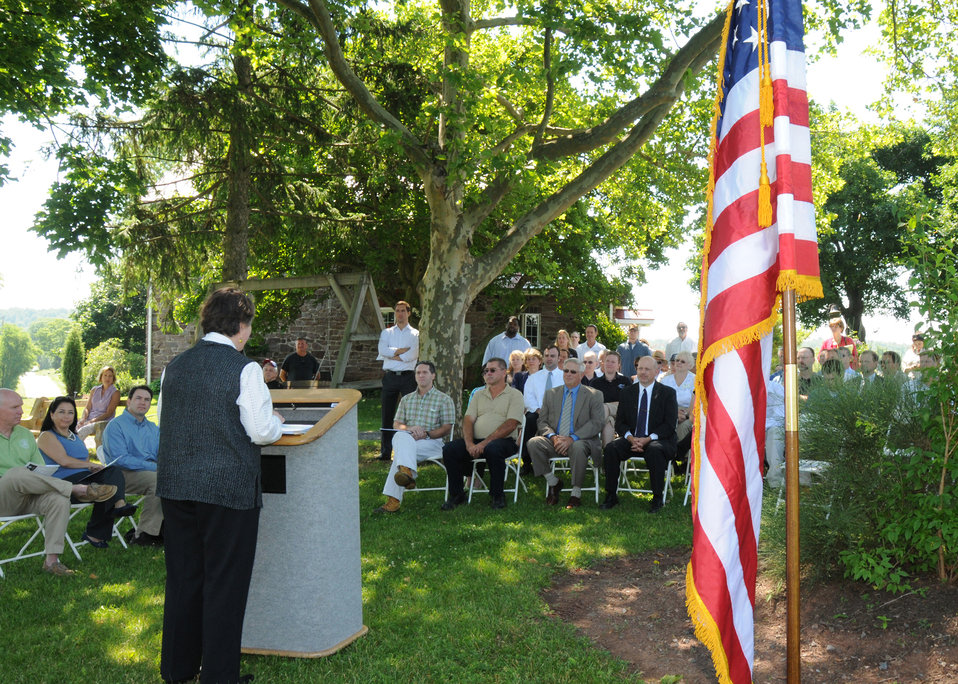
Agriculture Deputy Secretary Kathleen Merrigan announces the implementation of three showcase watersheds at the Eby-Patterson farm in Hershey, PA, on Friday, June 18, 2010. These watersheds are being established to demonstrate water quality improvements in a confined geographic area using producer outreach efforts, innovative conservation practices, and intensive conservation planning, implementation, and monitoring. (Seated to left of Deputy Secretary is U. S. Congressman (PA-17th District) Tim Holden, Interior Department Deputy Assistant Secretary for Water and Science Deanna Archuleta, and President, Tri-County Conewago Watershed Association and Director, Lower Susquehanna Initiative, Penn State University Matt Royer USDA photo 10di1409-88.